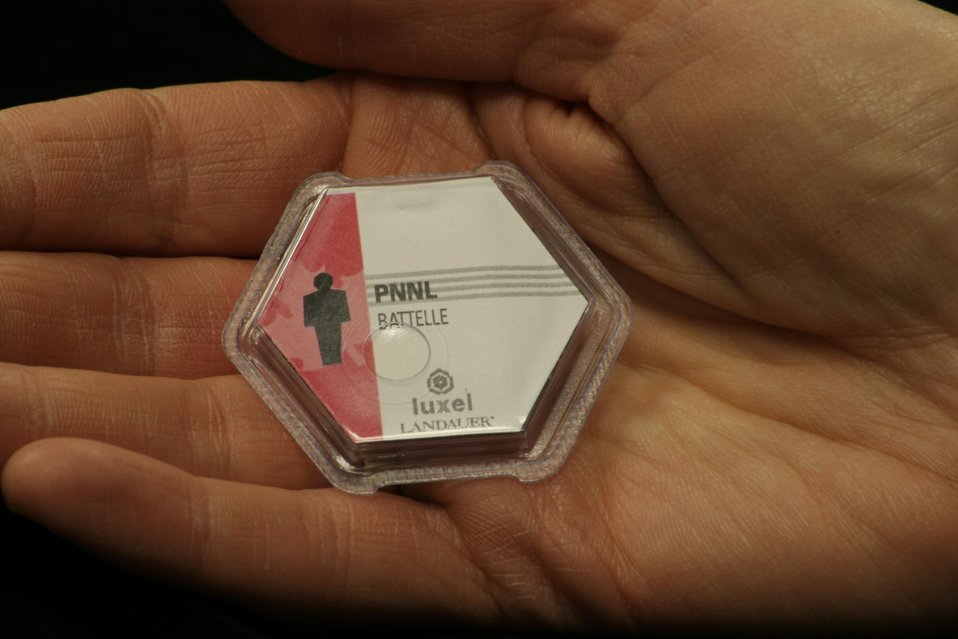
This palm-sized detector is used by medical radiology technicians, cancer treatment specialists and others to measure the radiation they received at the workplace.
The Optical Stimulated Luminescence (OSL) technology was developed at Pacific Northwest National Laboratory and commercialized by Battelle and Laundauer, the world leader in providing personnel radiation monitoring services. OSL is a radiation detection technique based on optical stimulation of solid-state materials with light to induce luminescence. The OSL technique has greatly improved the state of the art in gamma and beta radiation dosimetry. It is more sensitive that x-ray films and other technologies, is less expensive to manufacture, and can be read in one second.